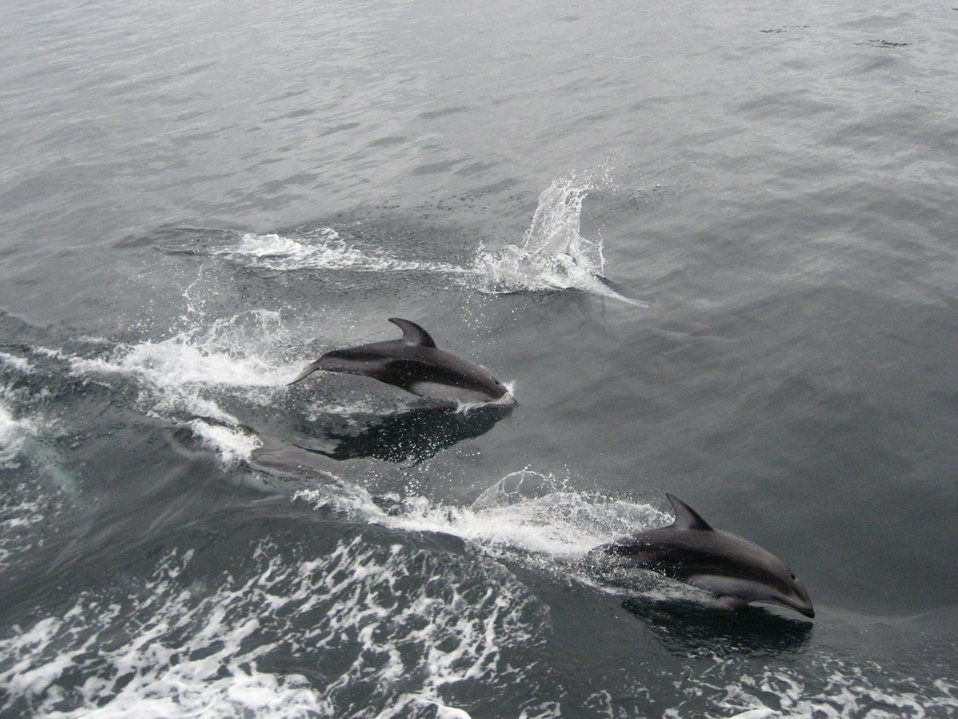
Dolphin riding the bow wave of the merchant vessel Coastal Nomad.